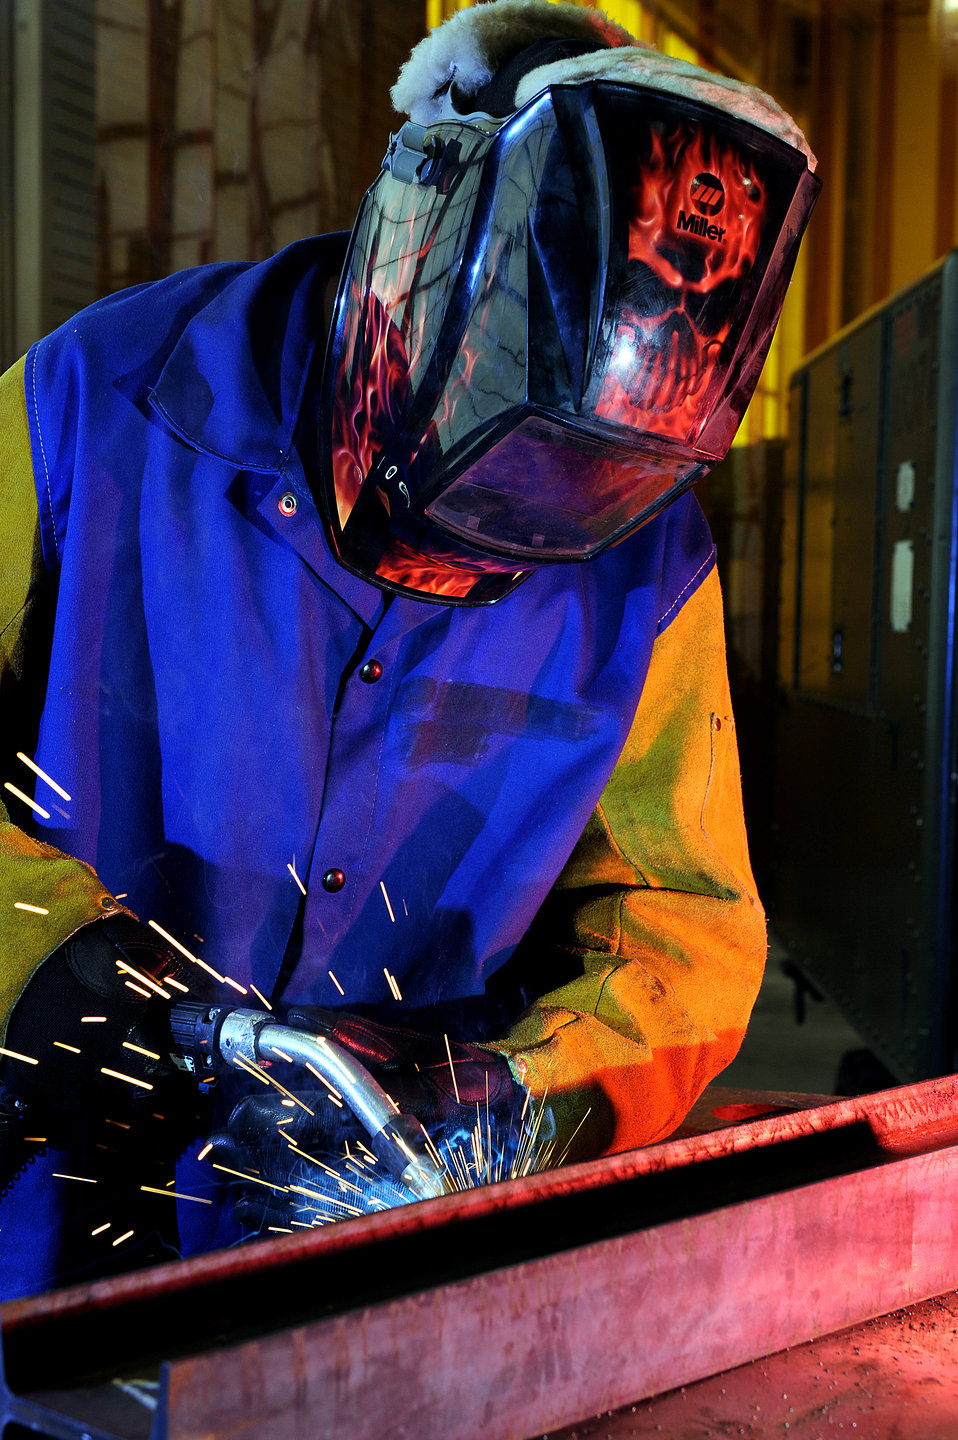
Hot spot at Nellis

Airman 1st Class Ryan Foxx welds a metal bracket on an engine stand April 16 Nellis Air Force Base, Nev. He is a metals technician assigned to the 57th Components Maintenance Squadron.